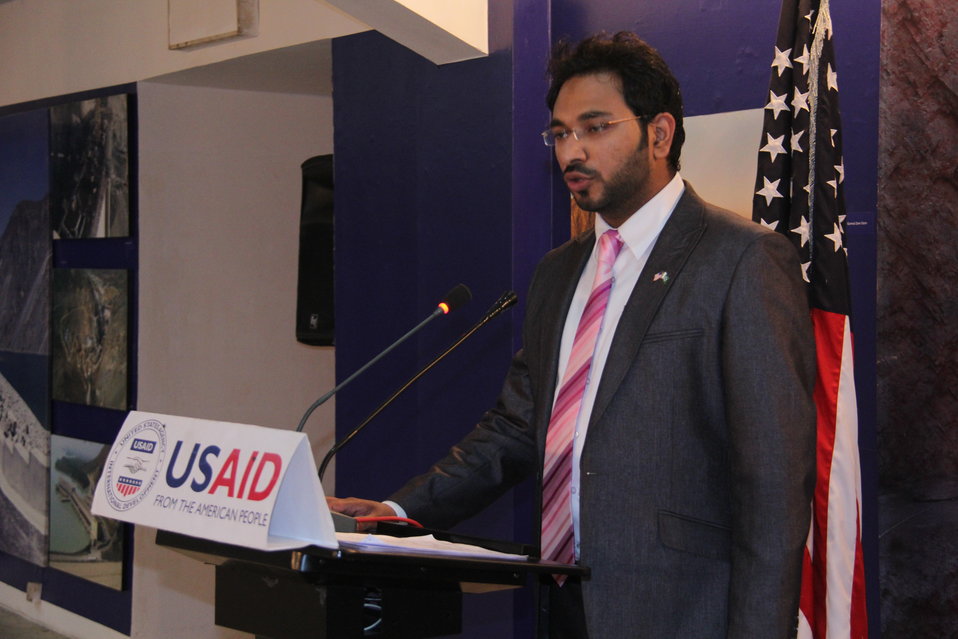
Addressing the attendees.